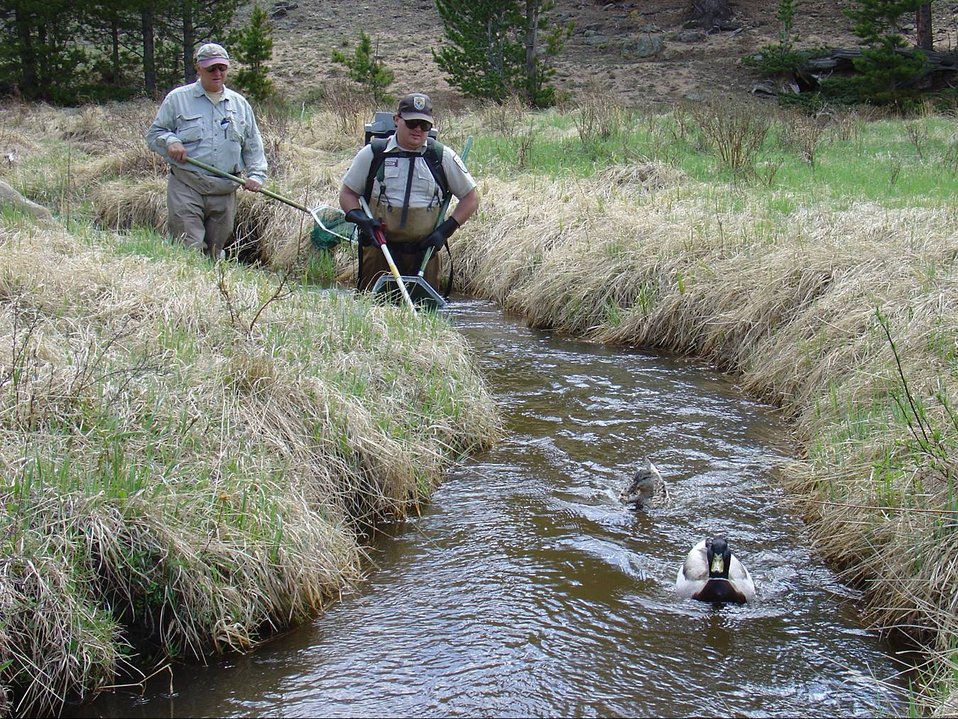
Electrofishing in Rocky Mountain National Park

The Colorado Fish & Wildlife Conservation Office continued an important partnership with the National Park Service to recover Threatened greenback cutthroat trout populations within the Rocky Mountain National Park. Service employees monitor streams in Rocky Mountain National Park.